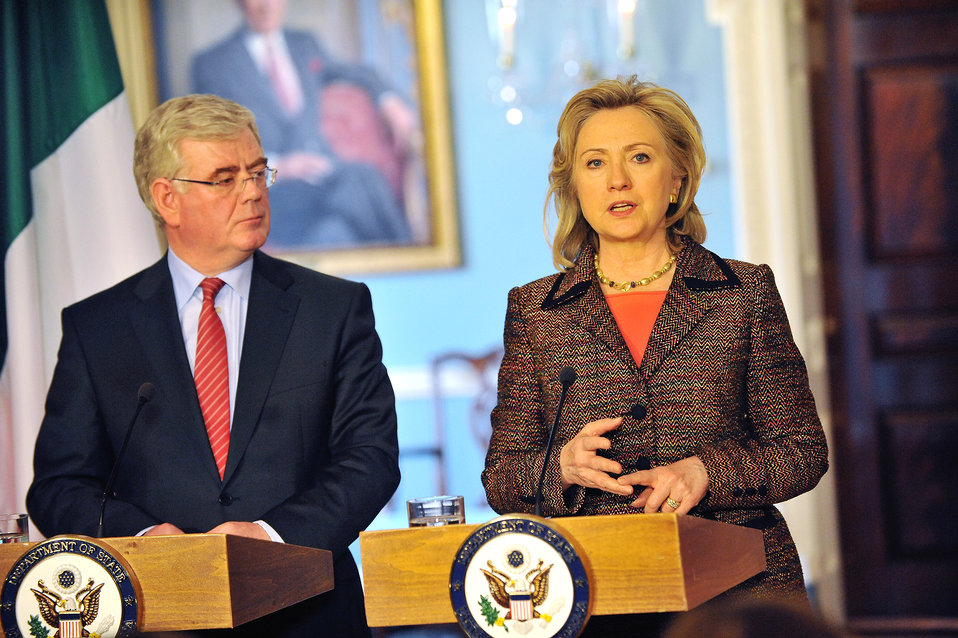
Secretary Clinton Holds a Joint Press Conference With Irish Deputy Prime Minister and Foreign Affairs Minister Gilmore

U.S. Secretary of State Hillary Rodham Clinton holds a joint press conference with Irish Deputy Prime Minister and Foreign Affairs Minister Eamon Gilmore, at the U.S. Department of State in Washington, D.C., on March 18, 2011.